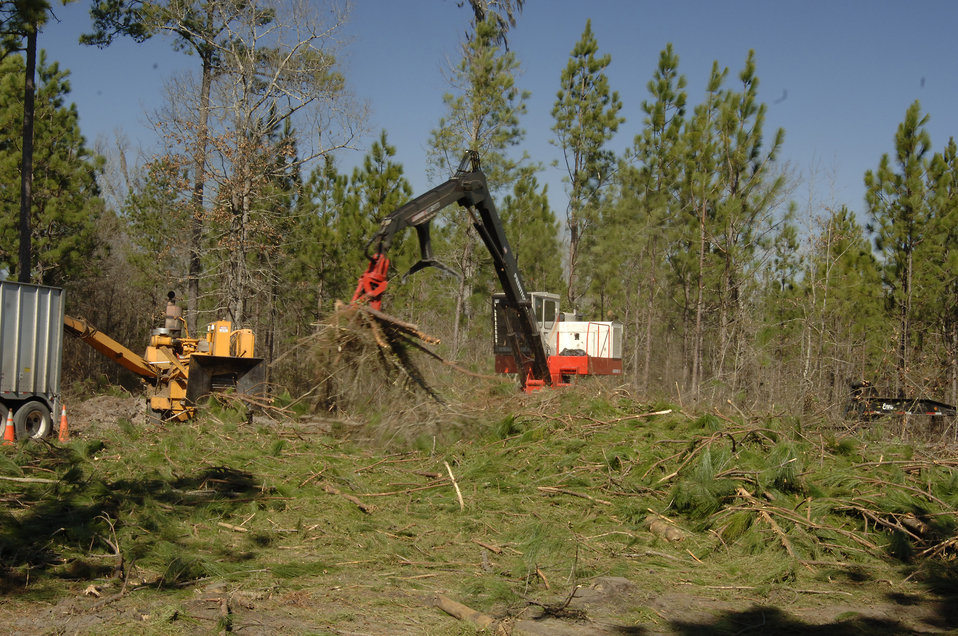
The U.S. Department of Agriculture (USDA) Forest Service (FS) is strongly committed to the management of the National Forests in an environmentally sound manner. The agency's top priority is to maintain and improve the health, diversity, and productivity of forest ecosystems for the enjoyment of current and future generations. Forest management includes guidance, administration, and support of the agency's forest products management and sales programs. Forest products include materials derived from a forest for commercial use such as lumber and paper, and also 'special forest products' such as medicinal herbs, fungi, edible fruits and nuts, and other natural products.